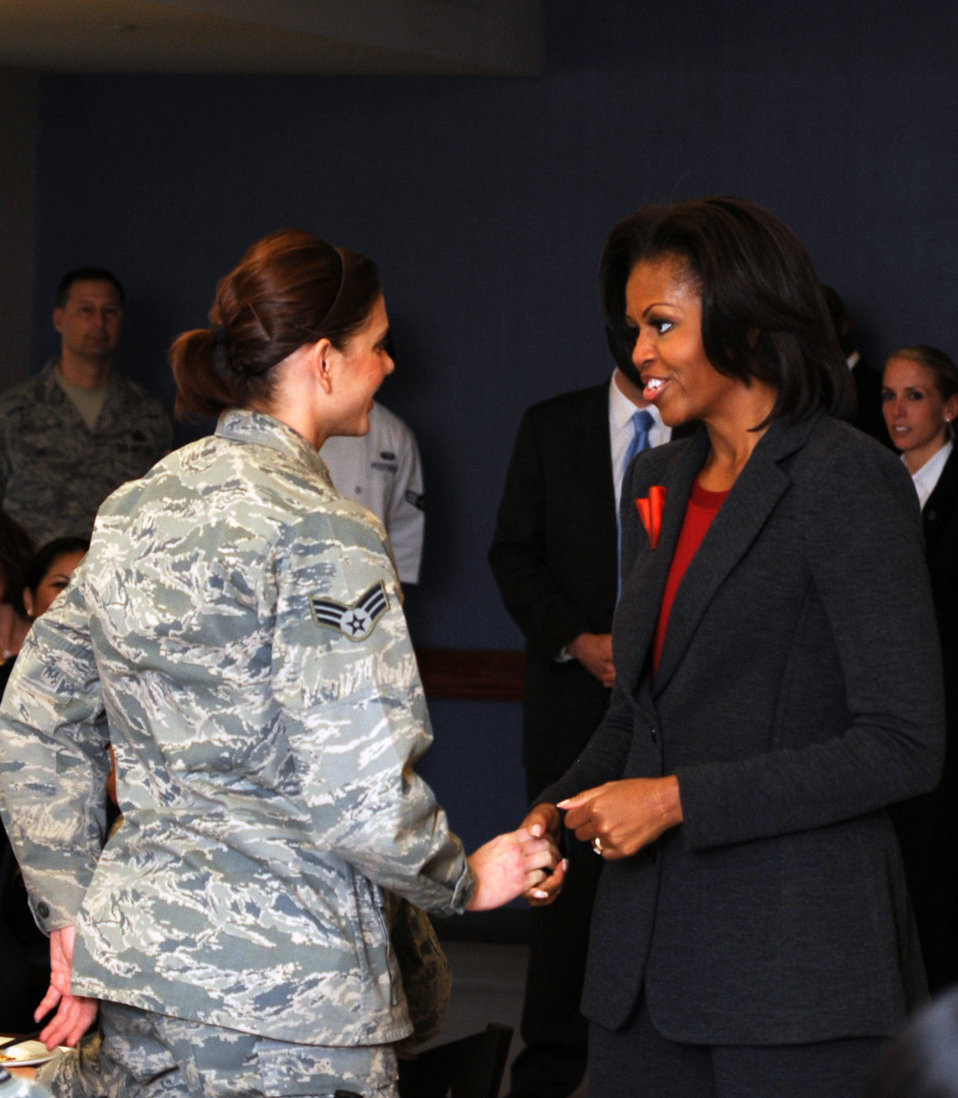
First lady visits Little Rock

Michelle Obama speaks to an Airman at Little Rock Air Force Base, Ark., Feb. 9, 2012. Little Rock AFB is one of six bases to implement the pilot Food Transformation Initiative program, designed to provide a wider variety of nutritional meals to service members and their families.